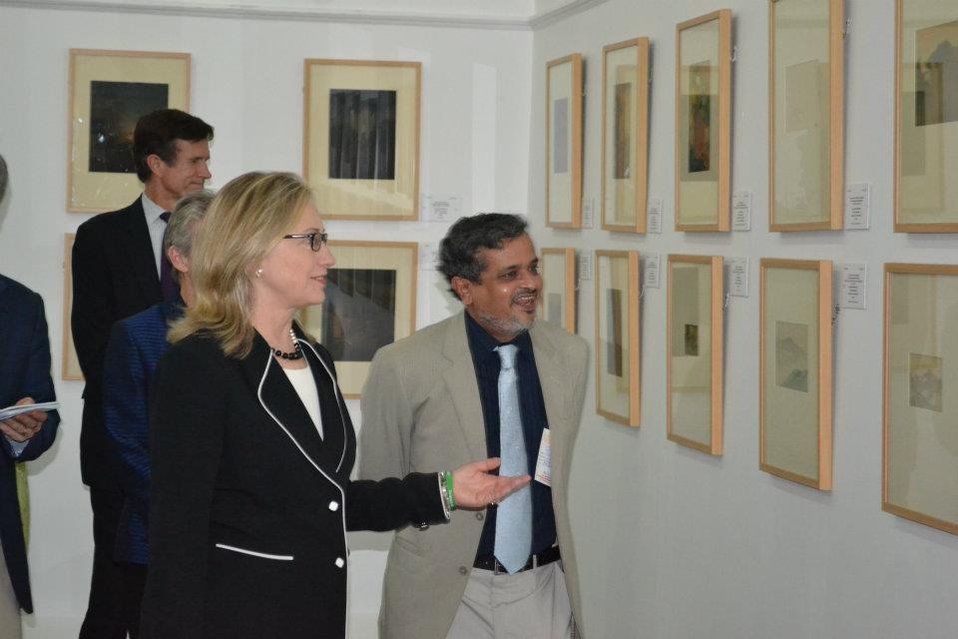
Secretary Clinton Tours Victoria Memorial Hall

U.S. Secretary of State Hillary Rodham Clinton tours Victoria Memorial Hall in Kolkata, India, on May 6, 2012.